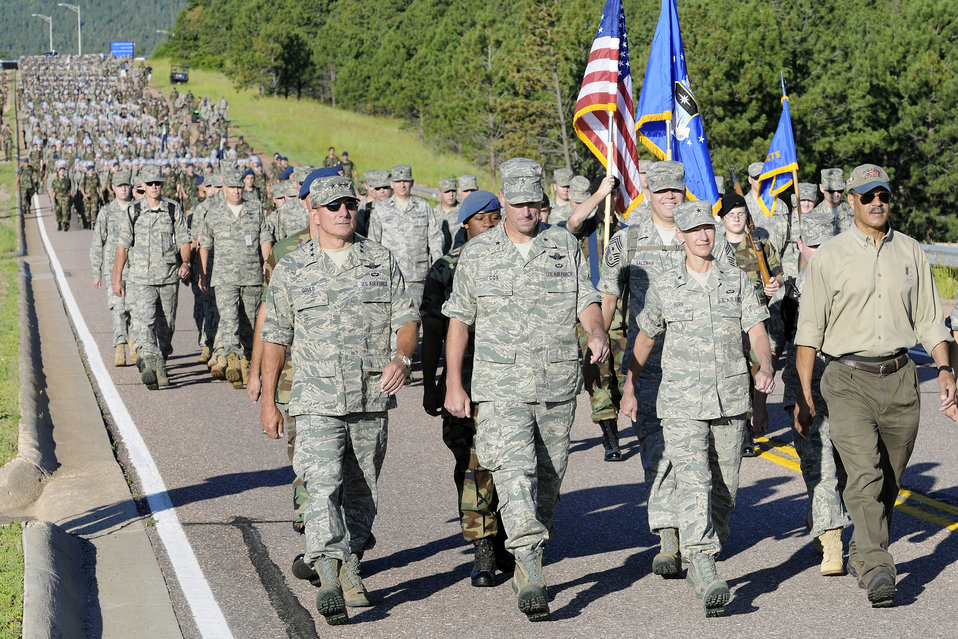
New cadets discover Jacks Valley

U.S. Air Force Academy leaders head the procession as more than 1,300 basic cadets march out to the Jacks Valley training area near Colorado Springs, Colo., July 13 to begin the field training portion of basic training.